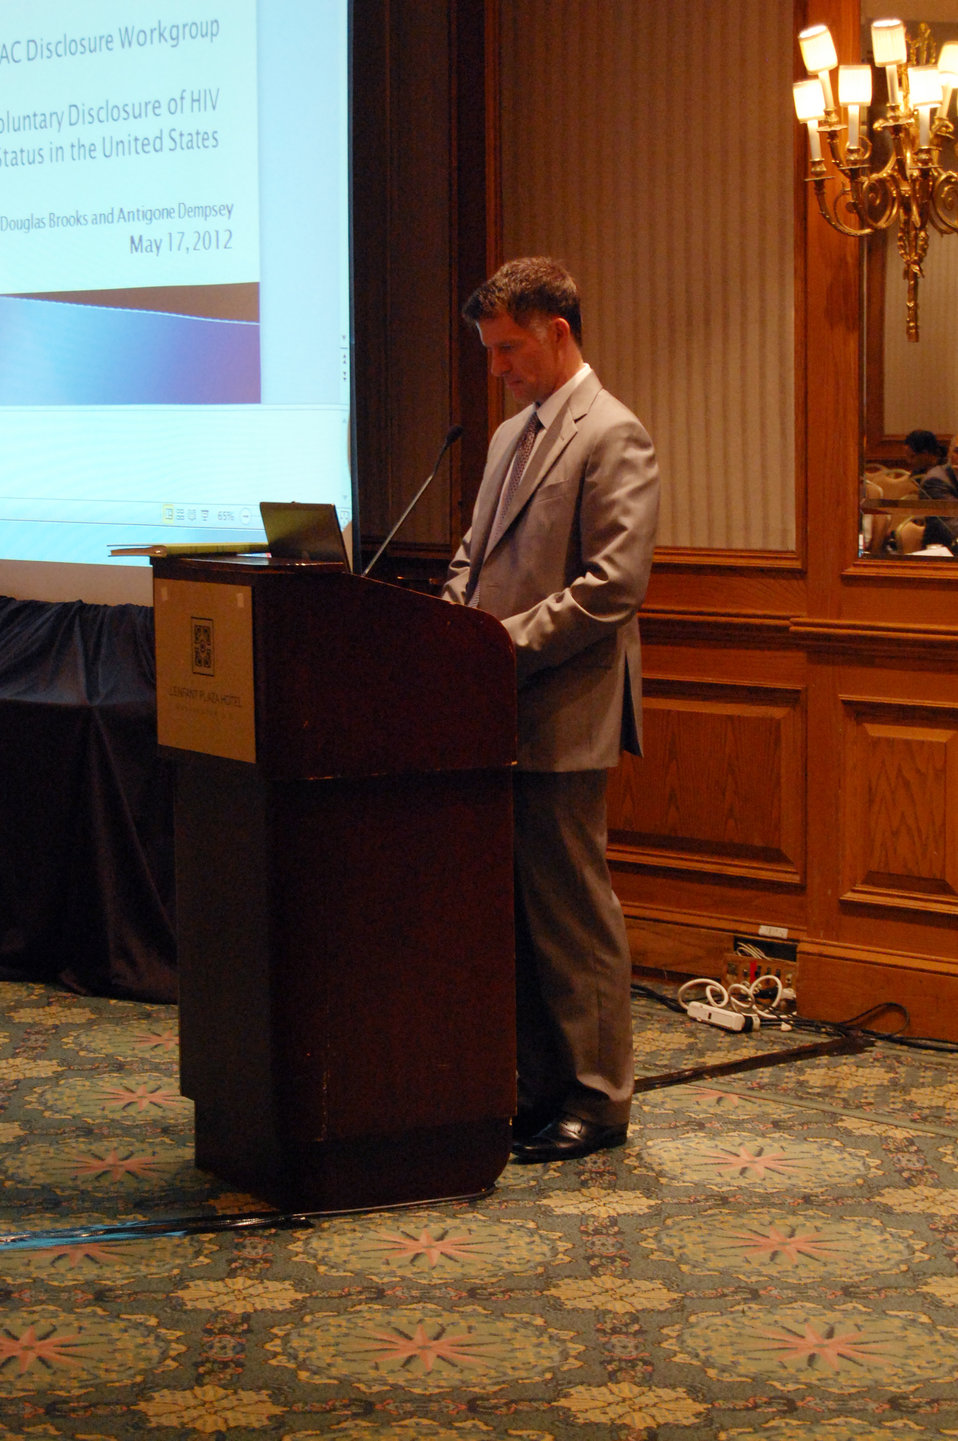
PACHA conf040